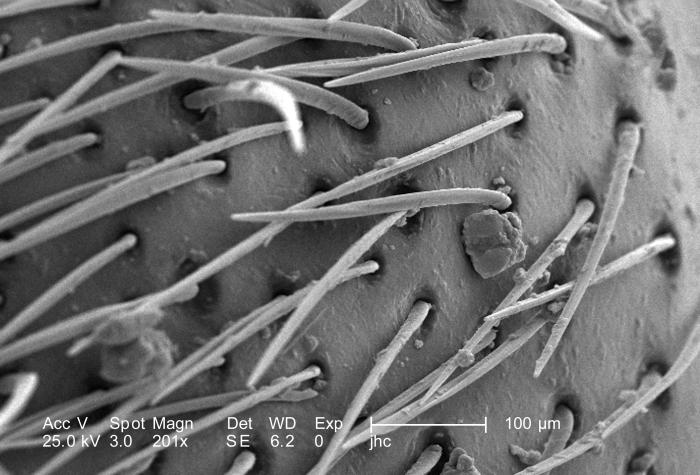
As seen in PHIL 9892, this scanning electron micrograph (SEM) revealed morphologic details on an unidentified region of a female velvet ant's, Dasymutilla sp., exoskeletal surface.At this magnification of 201X, you'll note the presence of sensorial 'hairs' upon the surface of the exoskeleton, which are really not hairs as in the mammalian sense, i.e., composed of keratin, but chitinous extensions composed of the same protein as that of the exoskeleton itself.The velvet ant is not really an ant at all, but a wasp, which merely resembles an ant, hence its name. It is a member of the Family, Mutillidae, and the Order, Hymenoptera. Also see PHIL 4638, 6363, and 6364 for photographs of the ant revealing its coloration, and velvety covering of external chitinous hairs.